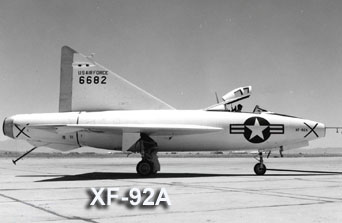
XF-92A

The experimental XF-92A was the first true delta-wing aircraft. It was to serve as a flying prototype for a supersonic interceptor. The XF-92 program was cancelled without further production, but its design led to other delta-wing aircraft.